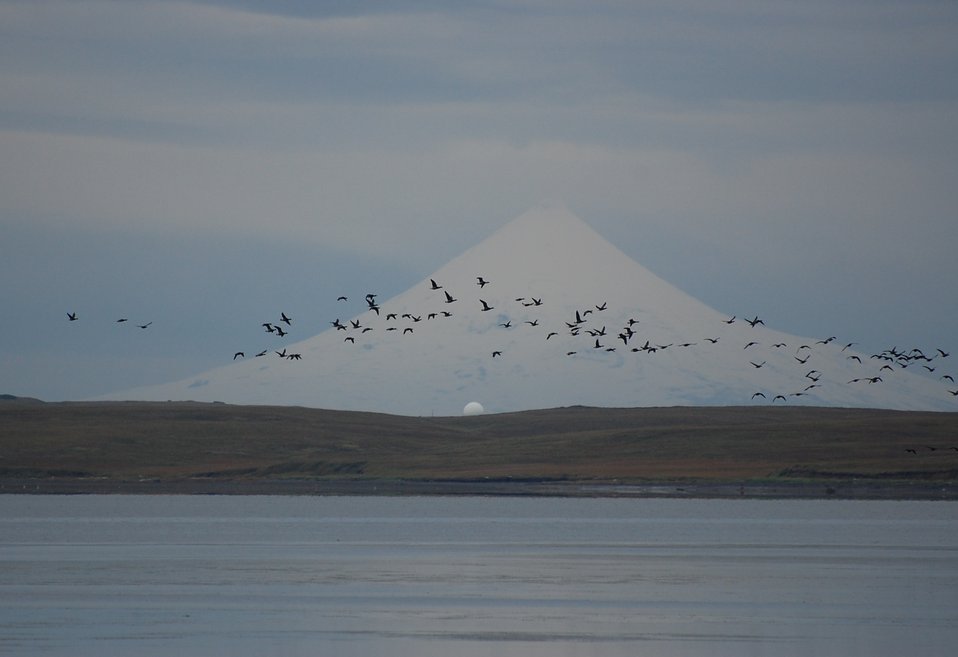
Brant and Shishaldin Volcano

Izembek National Wildlife Refuge